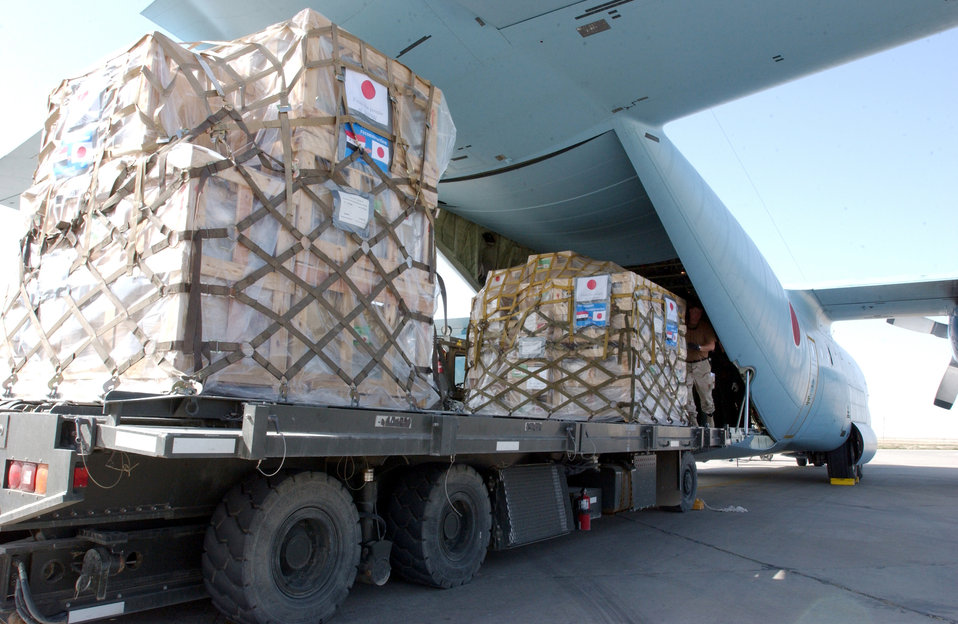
JASDF flies humanitarian mission

TALLIL AIR BASE, Iraq -- Airmen from the United States and Japan unloaded more than 5,000 pounds of humanitarian supplies here March 3. The Japanese C-130 flew that country's first airlift mission into Iraq.